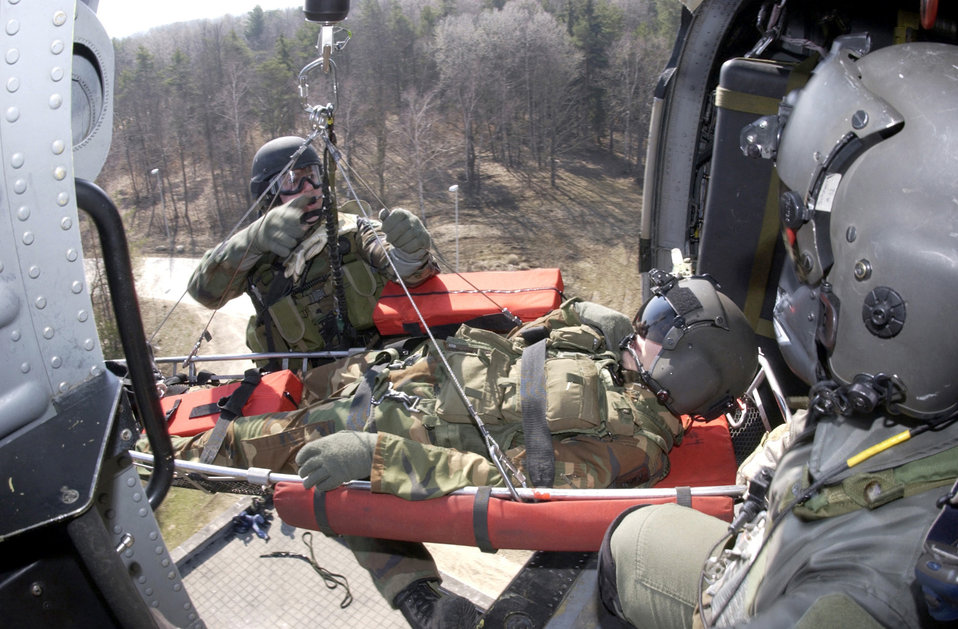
Exercise, exercise

HOHENFELS ARMY AIR FIELD, Germany -- Tech. Sgt. Brian Tharp stabilizes the litter as the